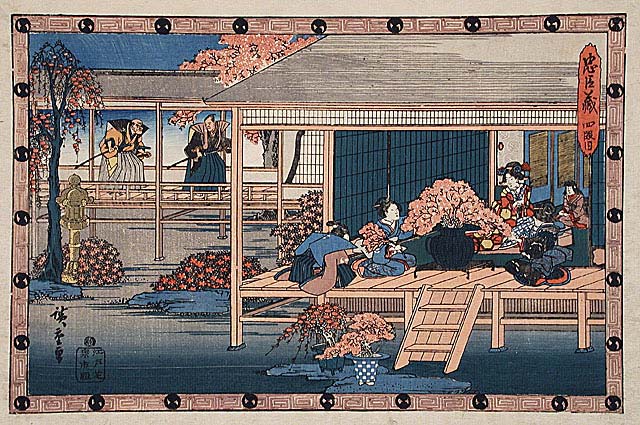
Act IV